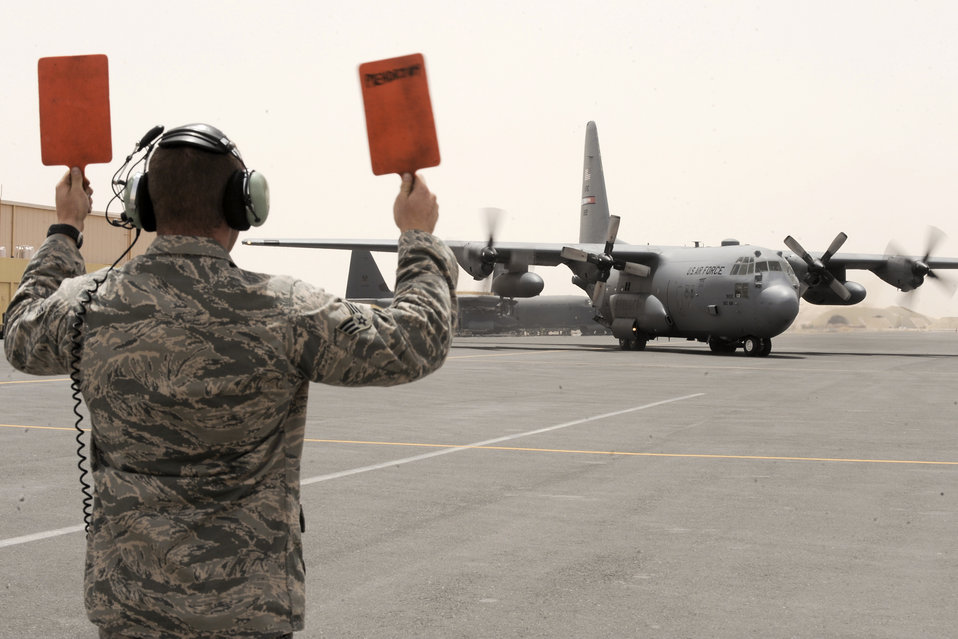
Airmen keep Hercules strong

Senior Airman Jared Kamann marshals a C-130 Hercules into a parking spot April 20 at an air base in Southwest Asia. Airman Kamann is a 746th Aircraft Maintenance Unit crew chief. He is a native of Plymouth, Ohio, and is deployed from Pope Air Force Base, N.C.